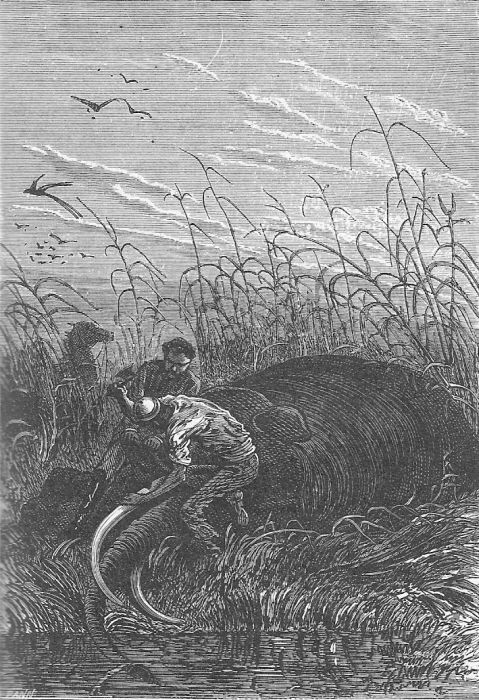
An illustration from Jules Verne's novel 'The Adventures of Three Englishmen and Three Russians in South Africa' (1870) drawn by Jules Férat. Polski: Ilustracja powieści Juliusza Verne'a 'Przygody trzech Rosjan i trzech Anglików w południowej Afryce' (1870) autorstwa Julesa Férata. Français : Jules Verne: 'Aventures de trois russes et de trois anglais dans l’Afrique australe' (1870), dessins par Jules Férat.